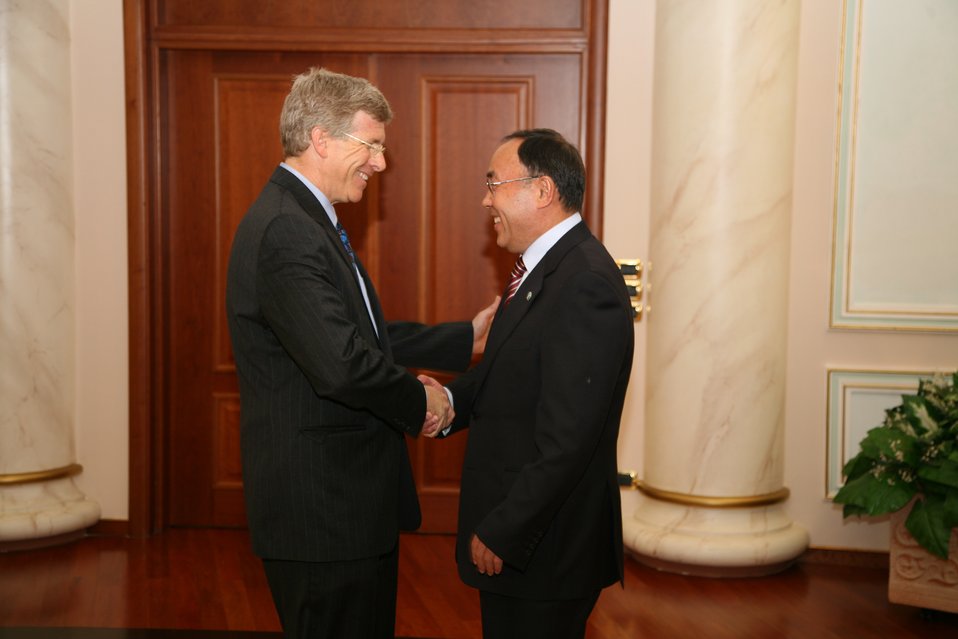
Kazakhstan 2